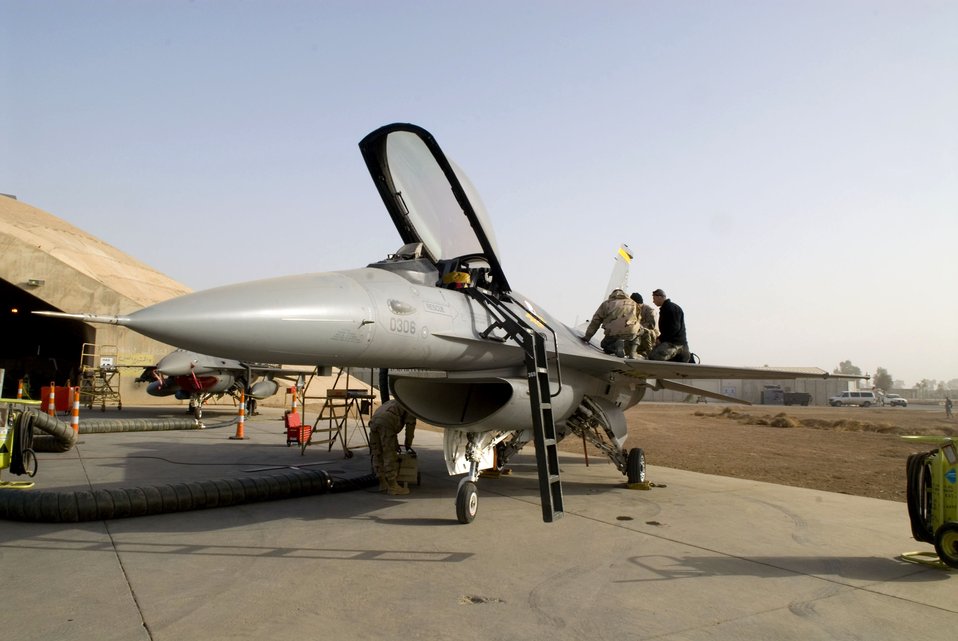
Nuts and bolts

Members of the 332nd Expeditionary Maintenance Squadron's Sheet Metal Flight perform maintenance on an F-16 Fighting Falcon Dec. 22 at Balad Air Base, Iraq. When leaks are found on the aircraft, it is up to the sheet metal flight members to reseal damaged areas.